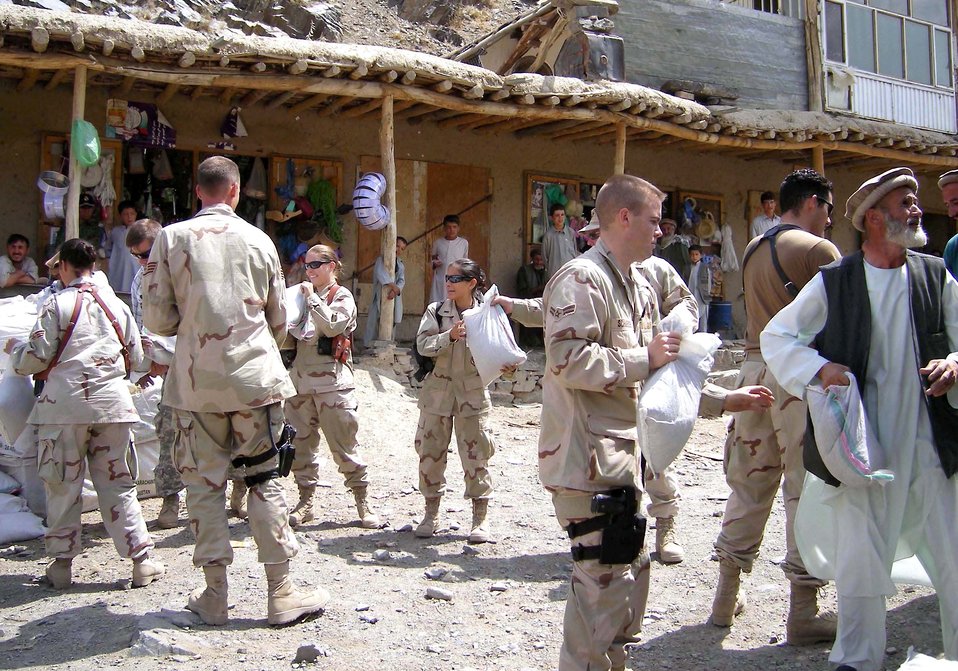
Humanitarian assistance

Members of the Panjshir Provincial Reconstruction Team and volunteers unload a 5-ton truckload of humanitarian assistance food supplies near Abdara, Afghanistan, on July 30. More than 180 Afghan locals are building a road by hand to connect three villages to the main road across the Panjshir River. Governor Haji Bahlol requested assistance for workers who are unable to provide for their families while building the road. The PRT also plans to provide tool kits with shovels, picks, hammers and other hand tools to assist with the project.